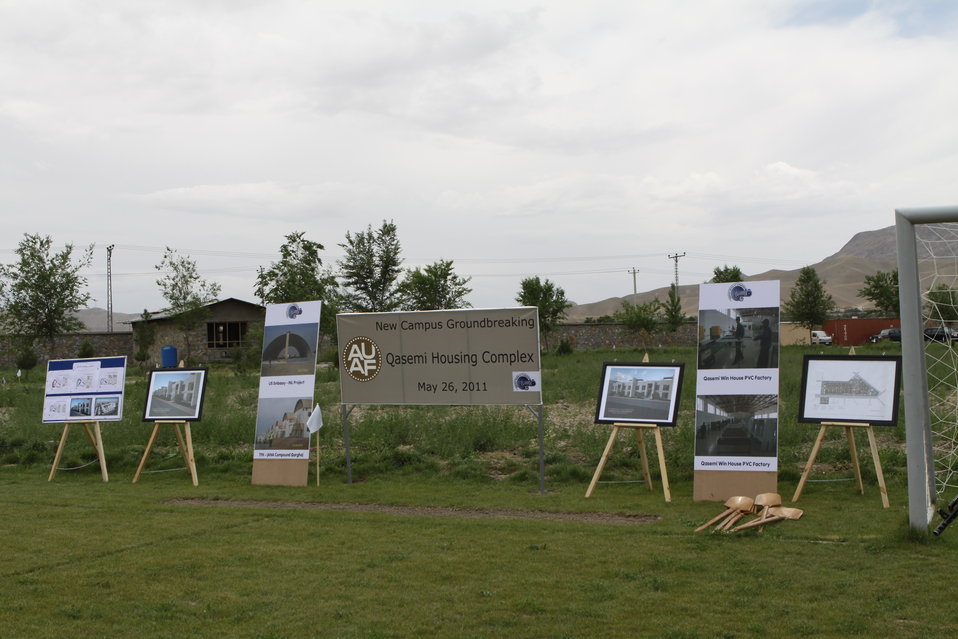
100526 AUAF Graduation 392